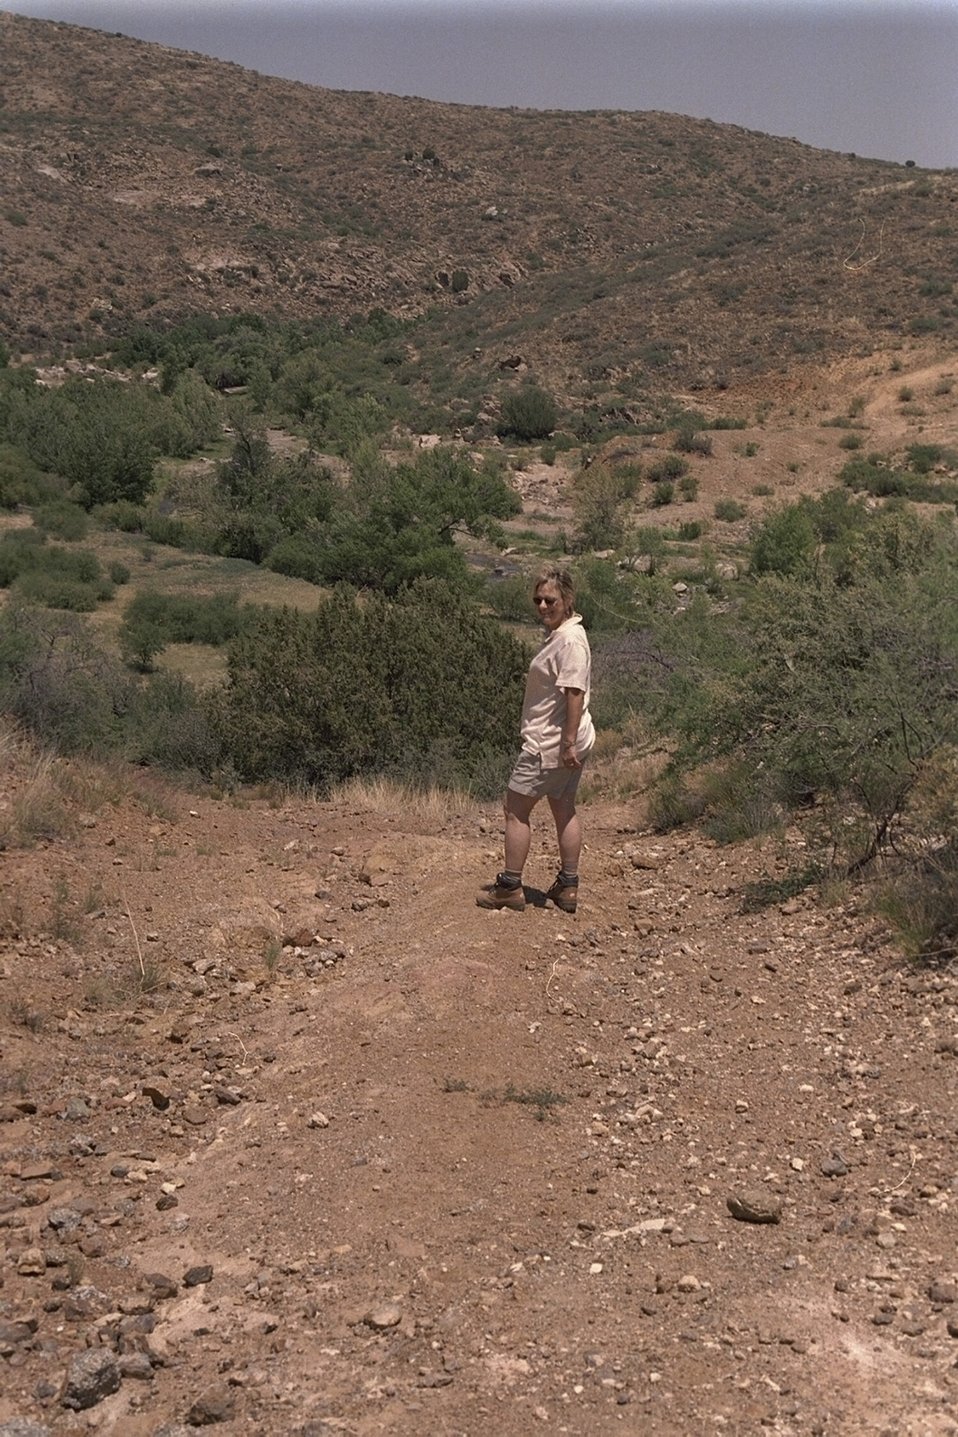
A BLM employee surveys the desert landscape of the Agua Fria National Monument.